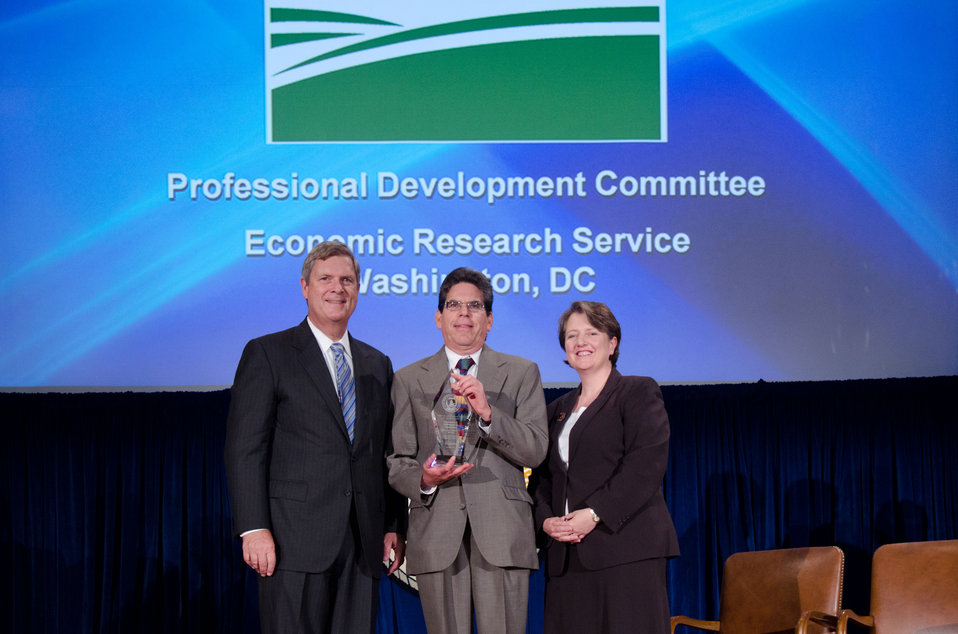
Agriculture Secretary Tom Vilsack (l) and Deputy Secretary Kathleen Merrigan (r), presents the Award to Professional Development Committee, Economic Research Service, Washington, DC. Patrice C. Lowstuter and Barry Krissoff, Group Leaders. For the development and implementation of a sustainable Professional Development program threat plants the seeds for a culture of communications, collaboration, and lifelong learning for all ERS employees. On Wednesday, September 14, 2011 in the Jefferson Auditorium at the US Department of Agriculture in Washington, DC.